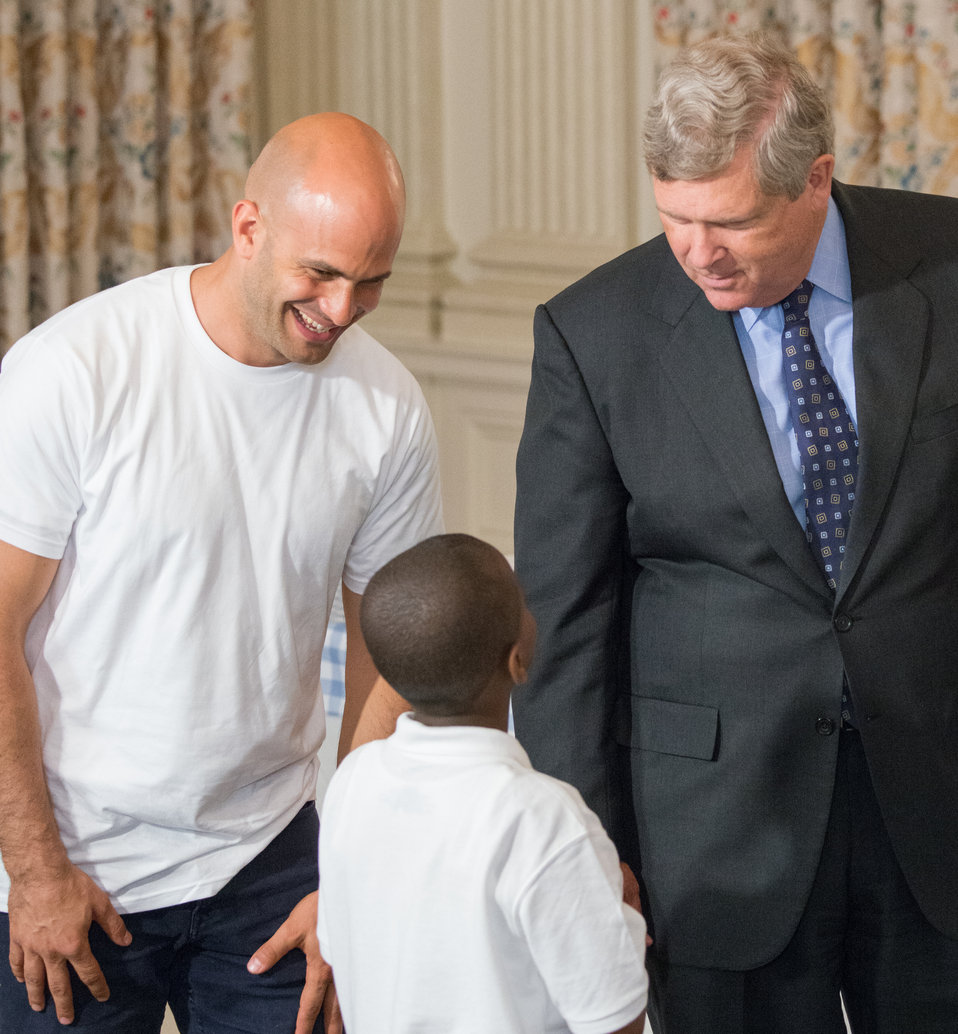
White House Executive Chef Sam Kass and Agriculture Secretary Tom Vilsack with Washington, D.C. students from Cleveland Elementary School, Friendship Public Charter School, Kimball Elementary School, Bancroft Elementary School, Harriet Tubman Elementary School, who helped plant the garden in the spring make lunch from this year’s summer crop with the help of White House chefs and visiting school nutrition directors from Orlando, FL, Dallas, TX, and West Virginia in the State Dining Room of the White House in Washington, D.C. on Thursday, Jun. 12, 2014.